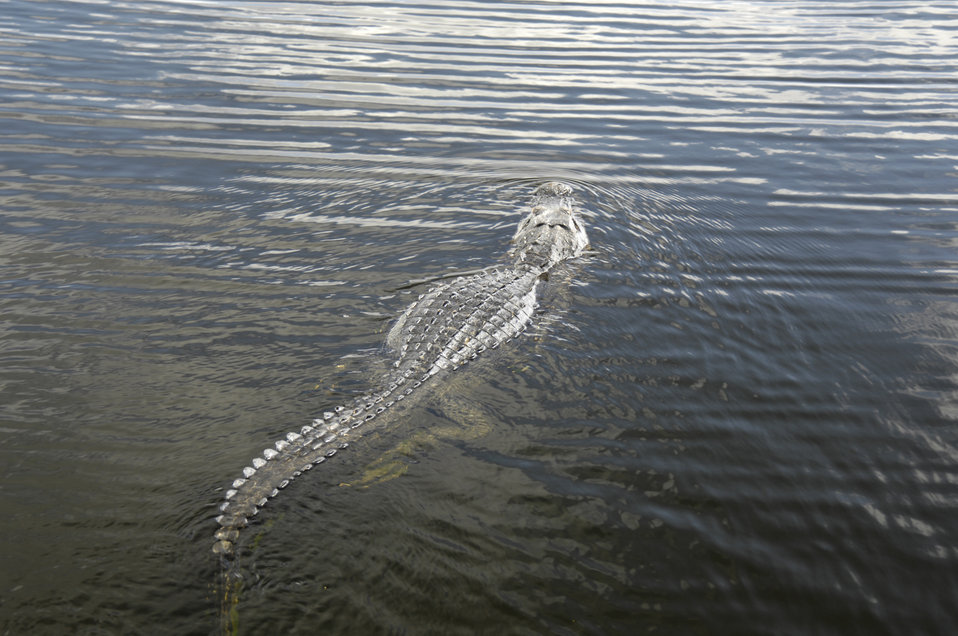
An American alligator swims in Everglades National Park, Florida on April 7, 2010. American alligators are found in the southeastern U.S. with over a million American alligators inhabiting Florida and Louisiana. Southern Florida is the only place where both alligators and crocodiles live side by side. American alligators live in freshwater environments, such as ponds, marshes, wetlands, rivers, lakes, and swamps, as well as in brackish environments. When they construct gator holes in the wetlands, they increase plant diversity and also provide habitat for other animals during drought periods. They are therefore considered an important species for maintaining ecological diversity in wetlands.